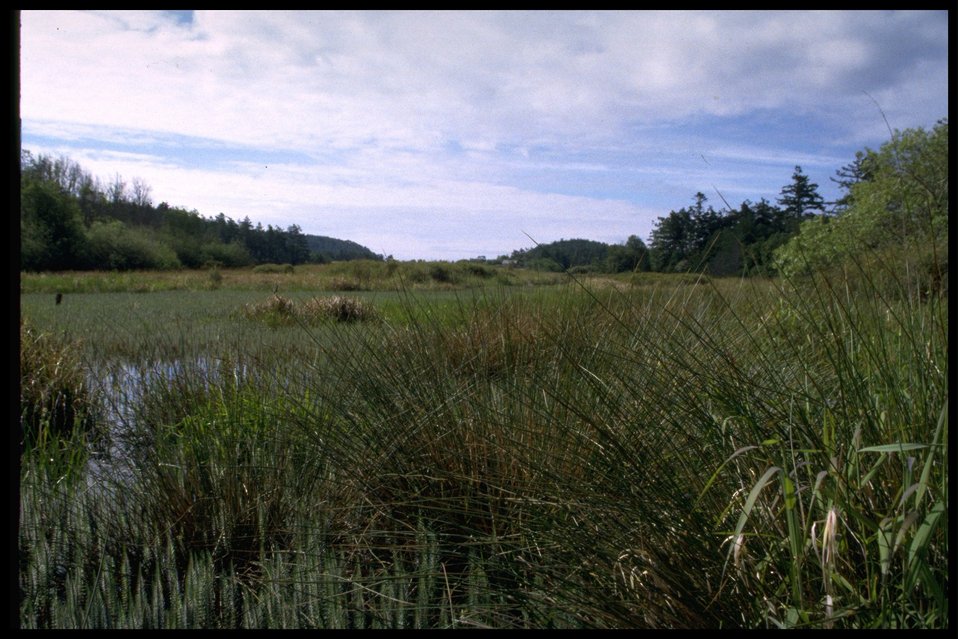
Chadwick Hill Marsh.